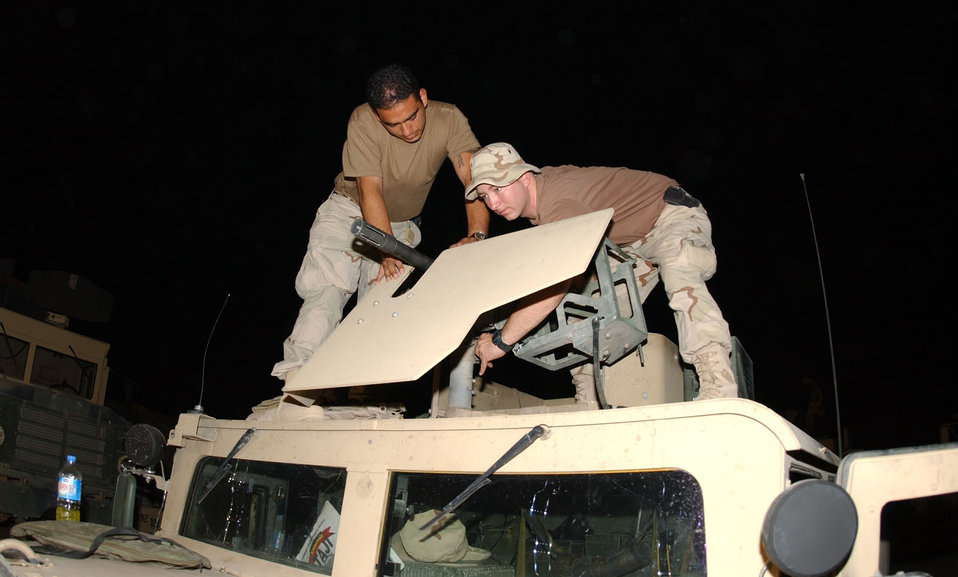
Convoy Airmen protect supply lines in Iraq

BALAD AIR BASE, Iraq -- Staff Sgt. Chris Hargis and Senior Airman Clint Berger break down a machine gun and check it to ensure it is ready before the next convoy. Their unit provides convoy protection to civilian contractors and Army units delivering supplies throughout the area of responsibility. They are assigned to the 732nd Expeditionary Mission Support Group's Detachment 2632.